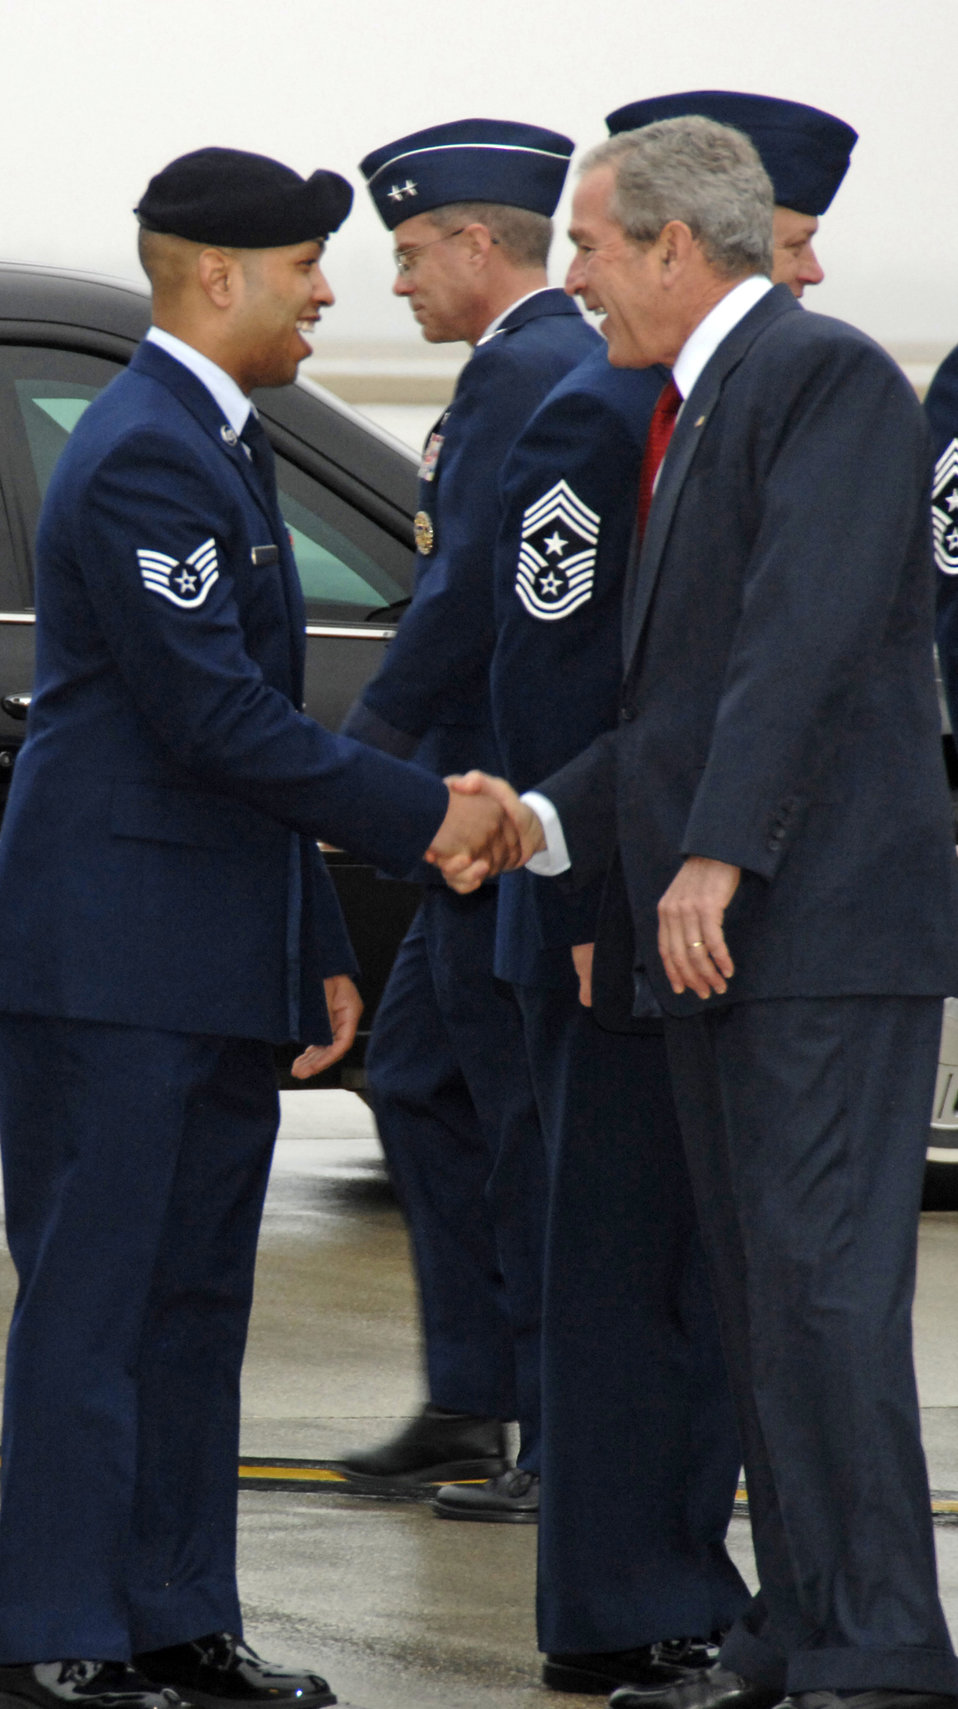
President Bush thanks Airmen, outlines importance of 'staying the course' in Iraq

Upon his arrival at Wright-Patterson Air Force Base, Ohio, March 27, President George W. Bush greets Staff Sgt. Juan Rodriguez Jr., a recent recipient of the Purple Heart. Sergeant Rodriguez is assigned to the 88th Security Forces Squadron.